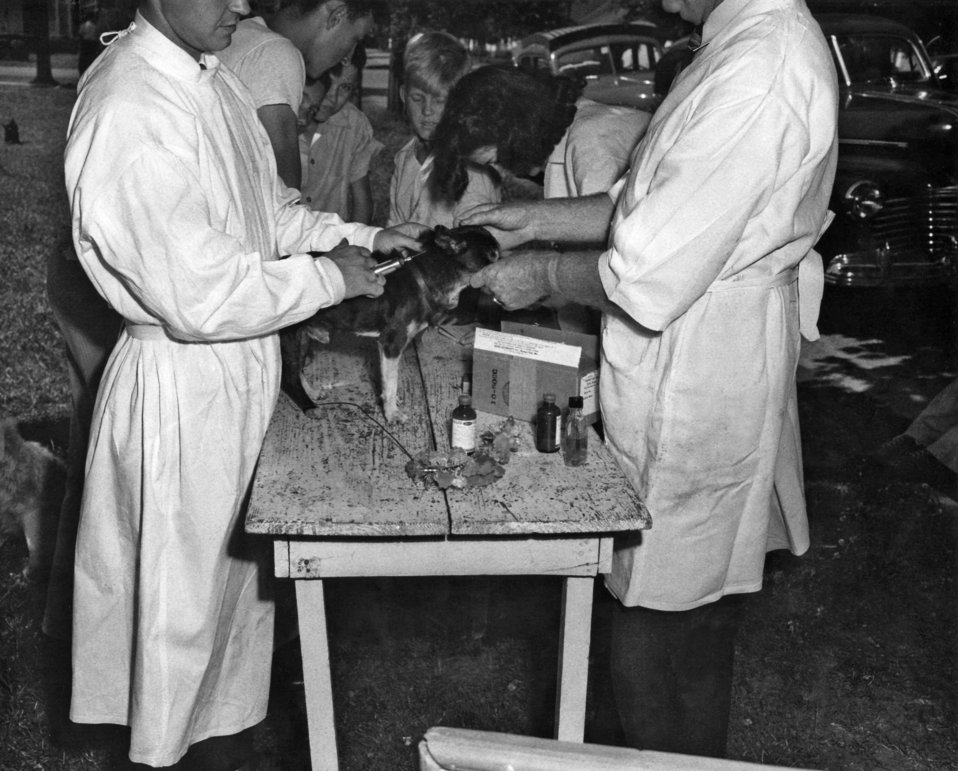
This image shows two veterinarians who had made a 'house-call', and were in the process of administering an on-site rabies vaccination to a domestic canine.